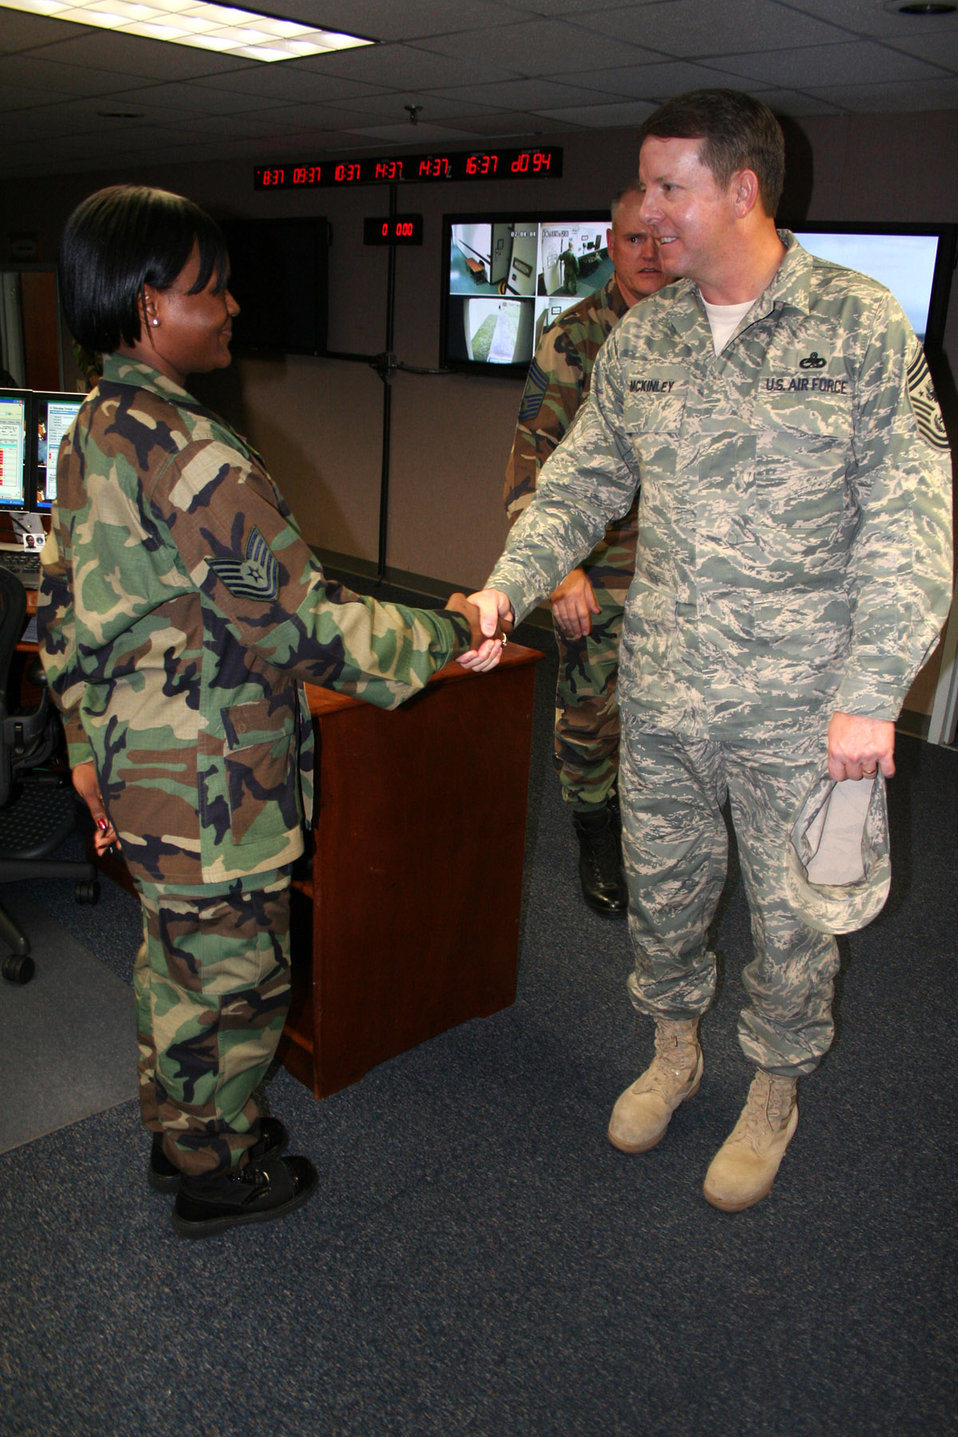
CMSAF kicks off USAFE tour with visit to Lajes Field

Chief Master Sgt. of the Air Force Rodney J. McKinley shakes hands with Tech. Sgt. Ishasia Love-Murphy April 4 at Lajes Field, Azores. Chief McKinley kicked off his tour of U.S. Air Forces in Europe installations with a two-day visit to Lajes Field April 4 and 5. Sergeant Love-Murphy is a command post controller.